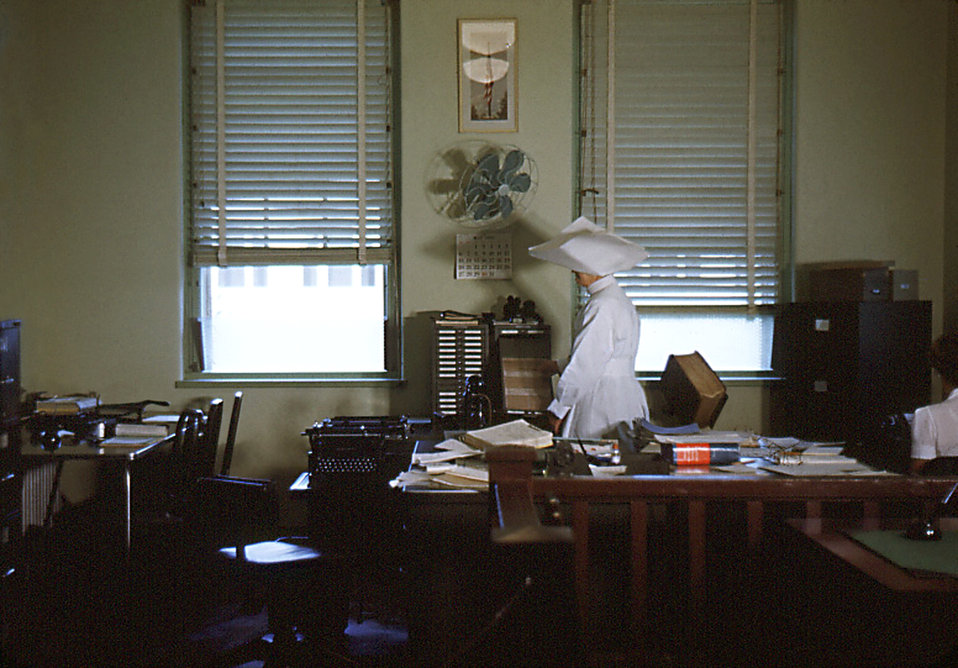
Depicted in this historic image was the interior of the Records Room in the Carville, Louisiana Leprosarium, where the records for every patient who'd entered the facility were kept, including date of birth, home address, citizenship status, etc. In this particular scene, one of the "Sisters' of Charity" was in the process of filing some patient records. The Sisters were members of the leprosarium staff, and it wasn't until recently, there were 21 Sisters on staff. The first group of four Sisters of the order founded by St. Vincent de Paul, and officially named Daughters of Charity, arrived at Carville, April 27, 1896, with Sister Beatrice Hart in charge. The sisters volunteered their services, in order to nurse the sufferers of leprosy who'd sought help at the leprosarium.